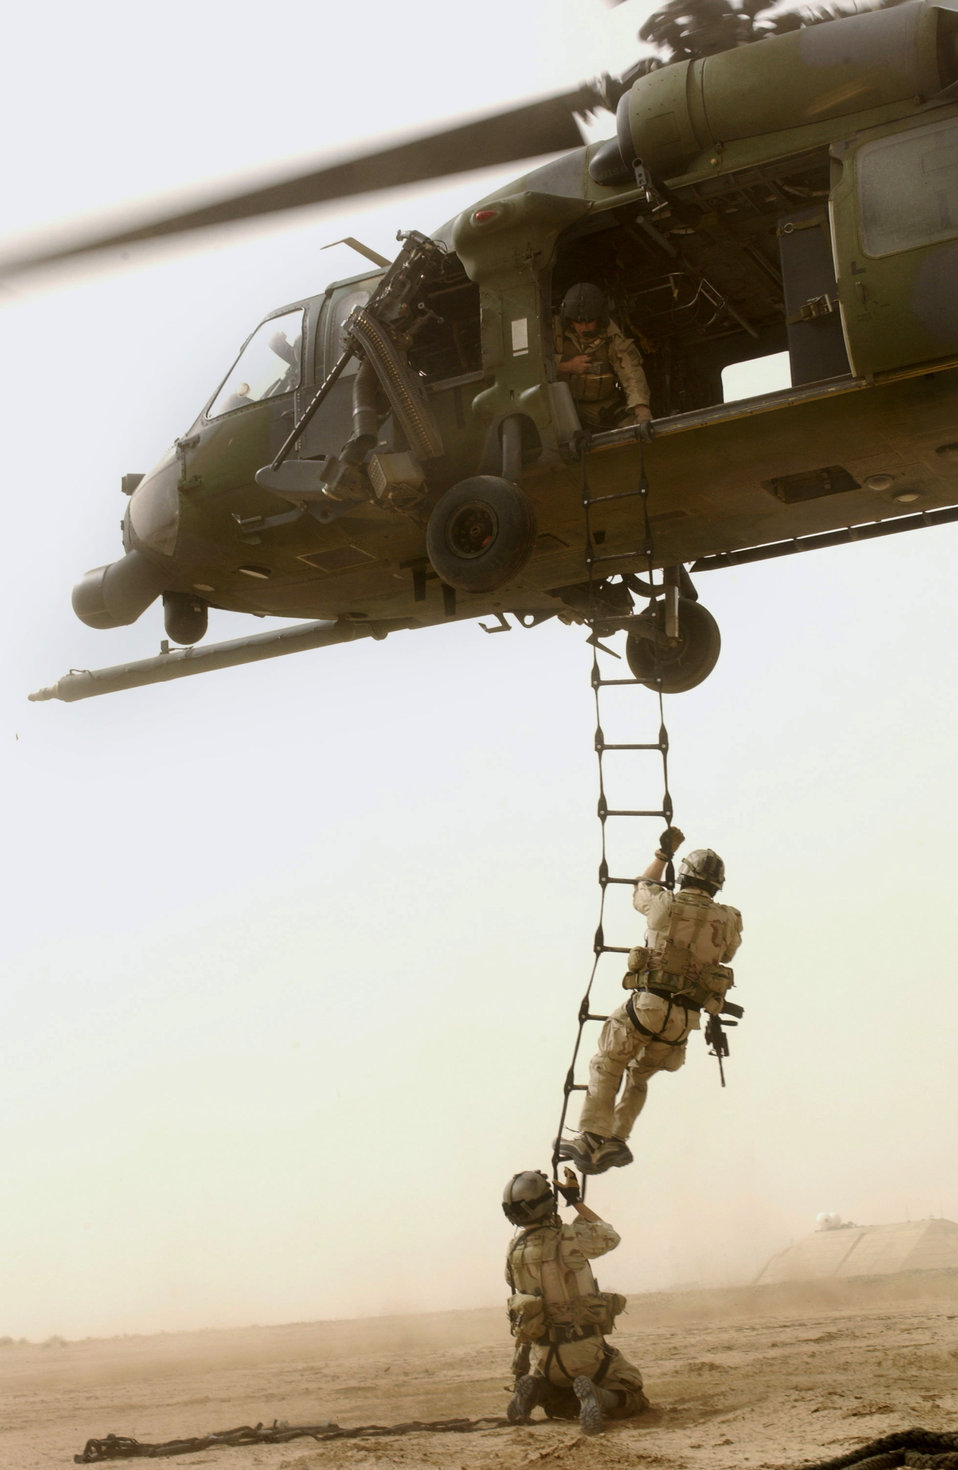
Up, up and away

BALAD AIR BASE, Iraq -- An Air Force HH-60G Pave Hawk from the 64th Expeditionary Rescue Squadron deploys pararescuemen here May 15.